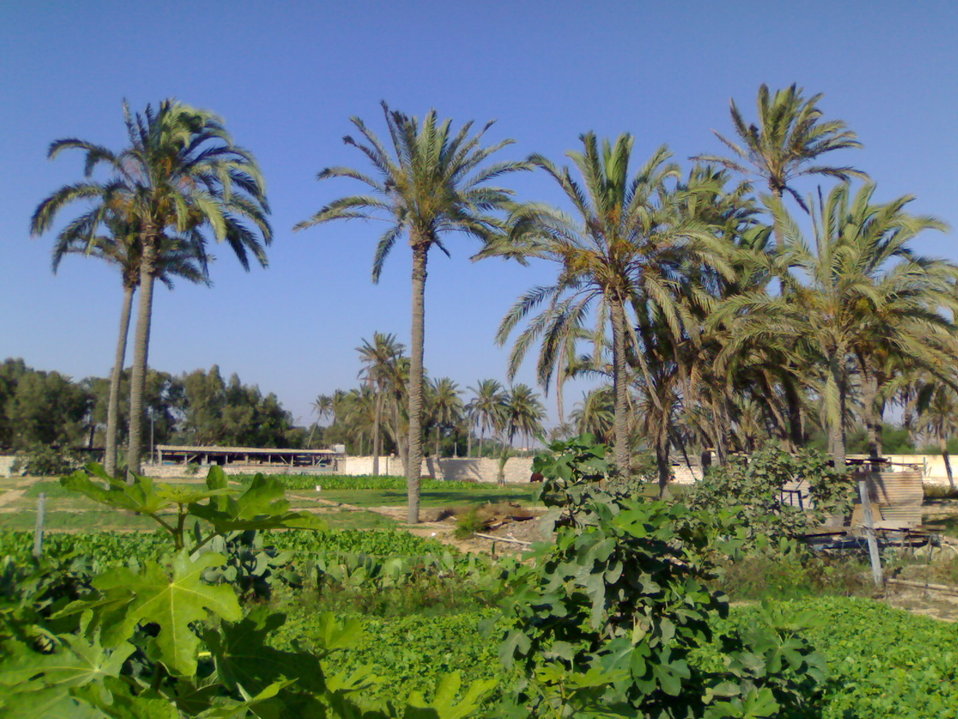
A farmm in Awjilah oasis, Libya.